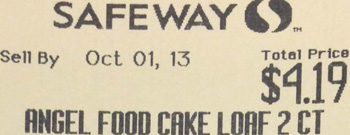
RECALLED – Angel Food CakesAngel Food Cake Recall FDA.pdf

September 26, 2013 – Product Recall – Safeway Recalls Several Varieties of Angel Food Cake Due to Undeclared Soy and Milk Allergens.